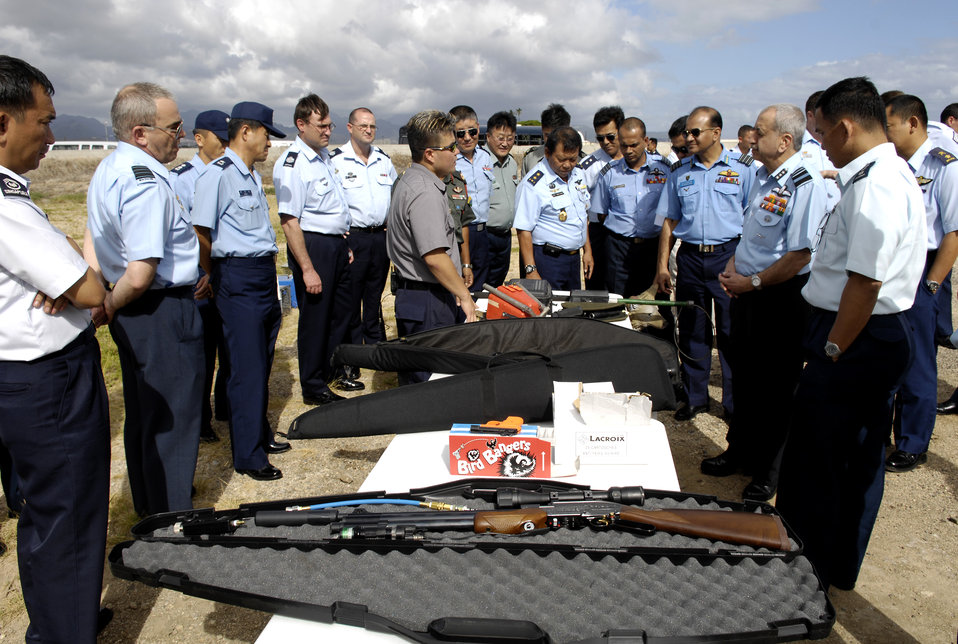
Pacific conference builds enlisted forces

0Darrin Phelps discusses bird air strike hazard procedures with members of the Pacific Rim Airpower Symposium Sept. 20 at Hickam Air Force Base, Hawaii. The PACRIM Airpower Symposium provides an opportunity for U. S. Pacific Forces Command members to interface with many of the nations they work with in peacetime and crises. Mr. Phelps is the assistant district supervisor for the Hawaii U.S. Depart of Agriculture, Wild Life Services